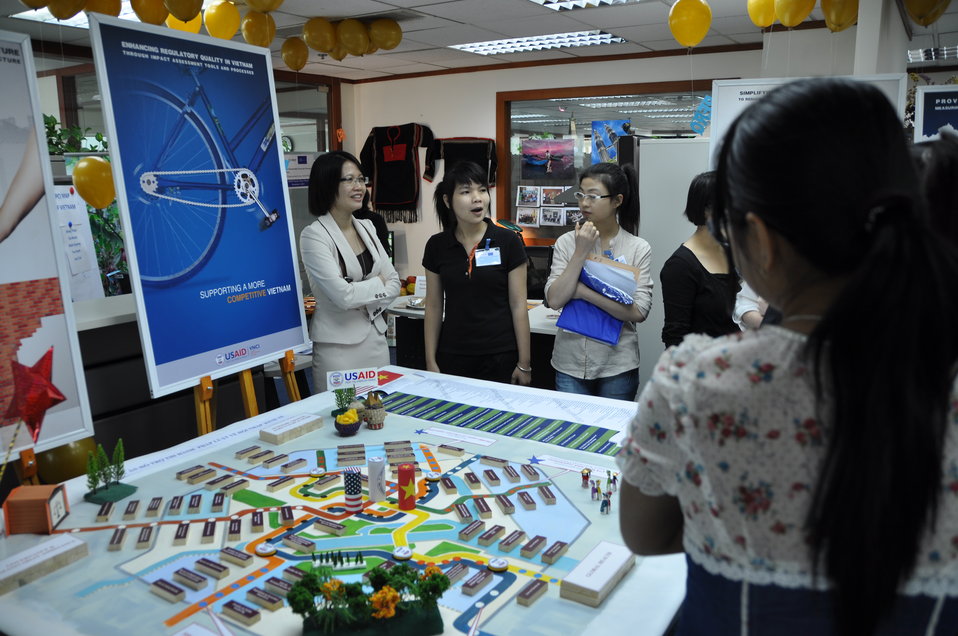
USAID Vietnam Open House, November 3, 2011